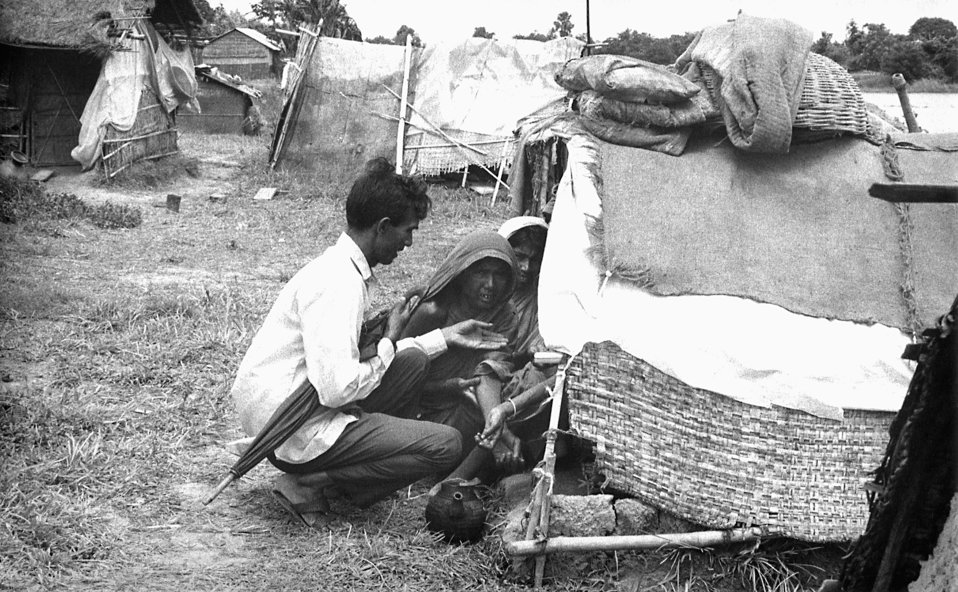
This 1975 photograph depicted a volunteer smallpox eradication team participant examining the smallpox vaccination sites on the family members that had been living in a bastee. A bastee was a tent city arrangement of transient homes, which were non-governmentally controlled, and where squalor ran rampant. The 'homes' were more or less makeshift tent-houses with no utilities such as running water or electricity.If the vaccination is successful, a red and itchy bump develops at the vaccine site in three or four days. In the first week, the bump becomes a large blister, fills with pus, and begins to drain. During the second week, the blister begins to dry up and a scab forms. The scab falls off in the third week, leaving a small scar. People who are being vaccinated for the first time have a stronger reaction than those who are being revaccinated.